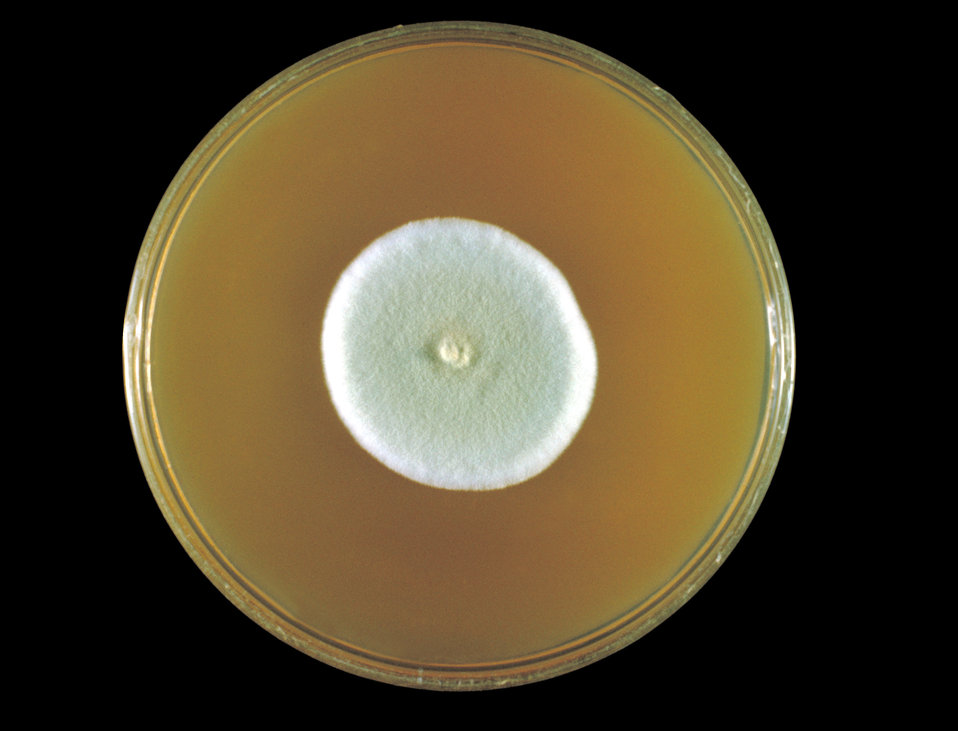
This is a photograph of a late culture of the fungus Chrysosporium histoplasmoides.